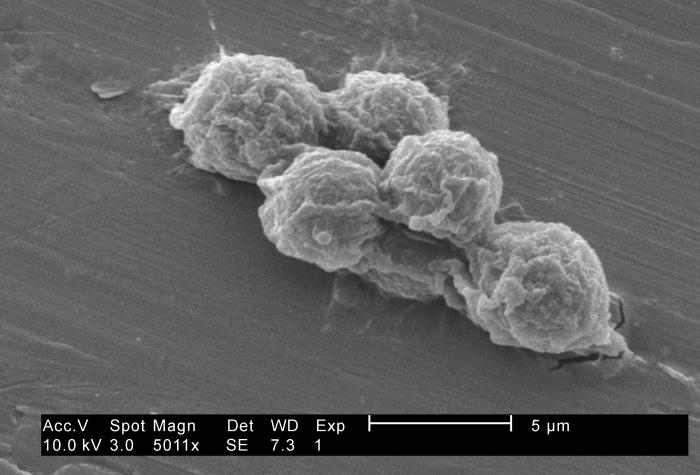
Under a moderately-high magnification of 5011X, this 2002 scanning electron micrograph (SEM) revealed some of the ultrastructural morphology exhibited by small grouping of Hartmannella vermiformis amoebae trophozoites.